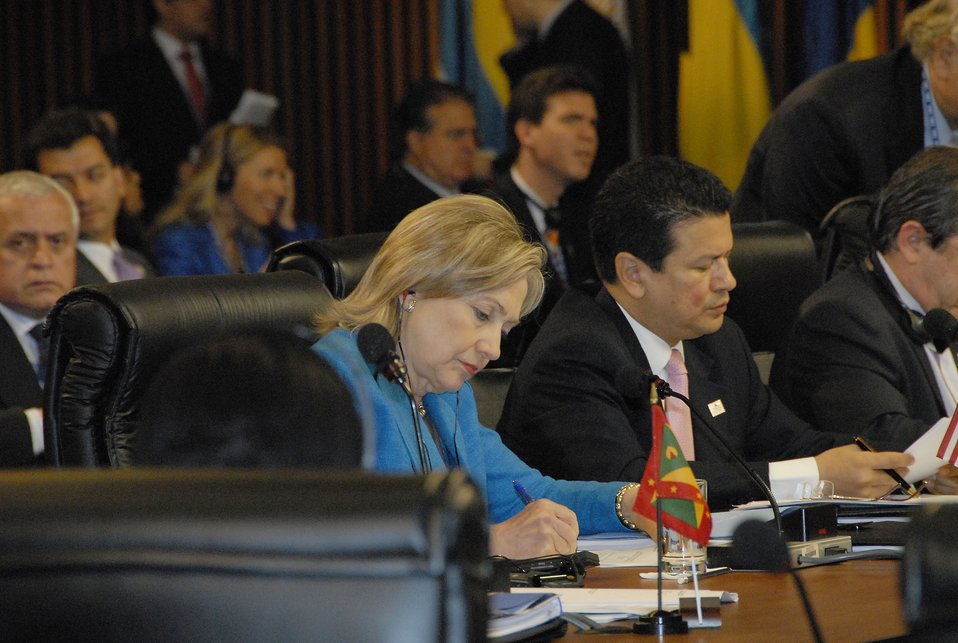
Secretary Clinton Participates in 40th OAS Assembly

U.S. Secretary of State Hillary Rodham Clinton participates in the 40th Assembly of the Organization of American States in Lima, Peru, on June 7, 2010.